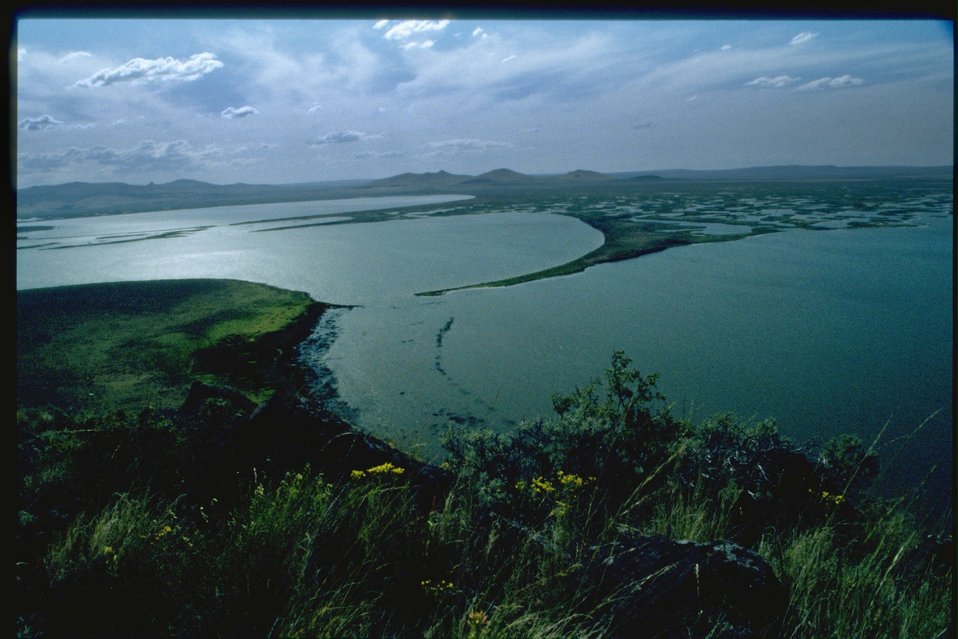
Warner Wetlands.